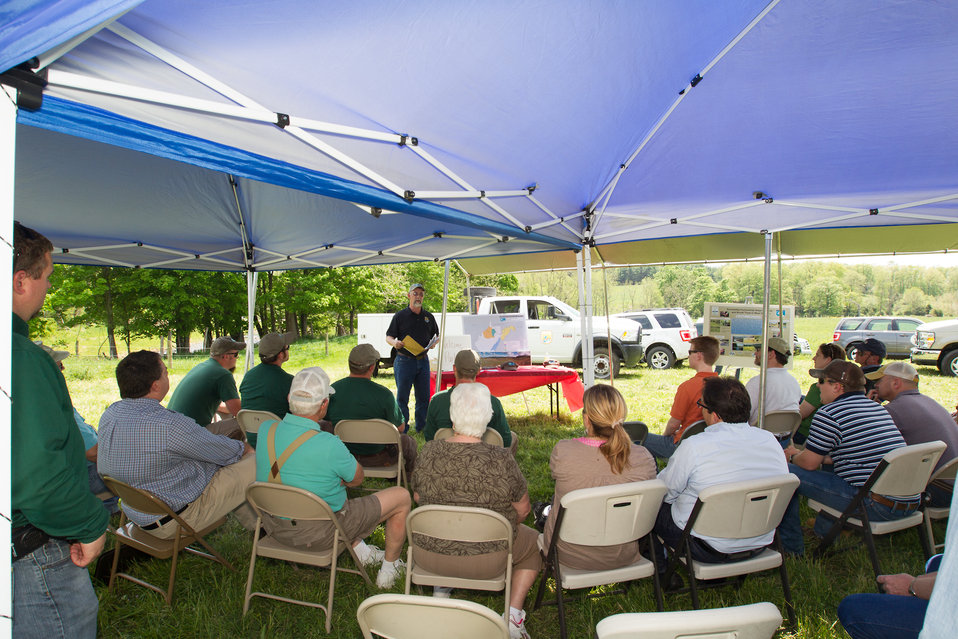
Celebrating 1 Million Feet of Conservation Fence in WV

Partners for Fish and Wildlife Program